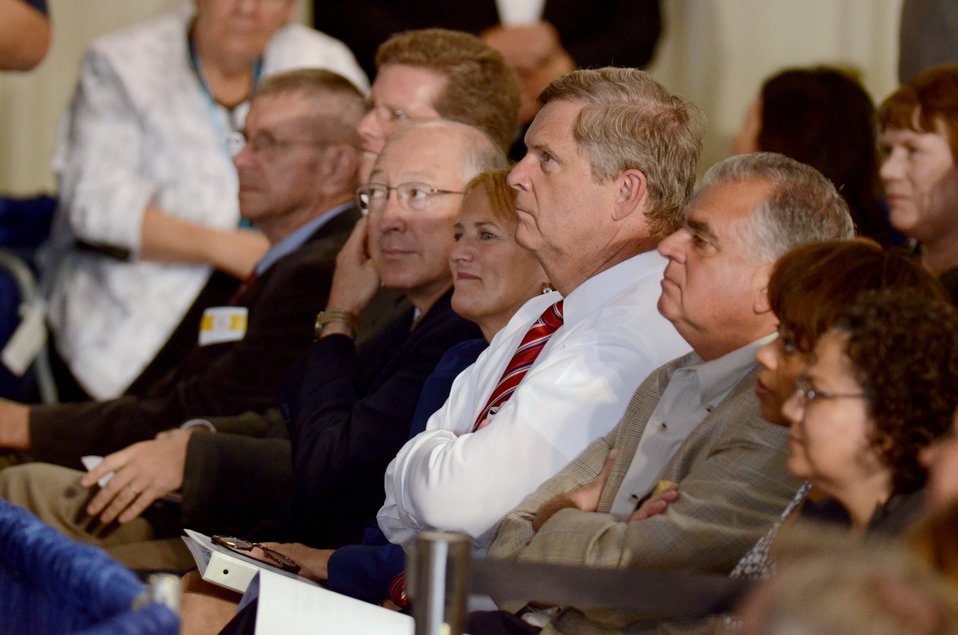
Agriculture Secretary Tom Vilsack (center white shirt) listens to President Barack Obama speaking at the Northeast Iowa Community College for a White House Rural Economic Forum on Tuesday, Aug. 16, 2011. Secretary Vilsack noted that the President’s visit would focus on agriculture’s contribution to the national economy, and how to create more jobs in rural America.